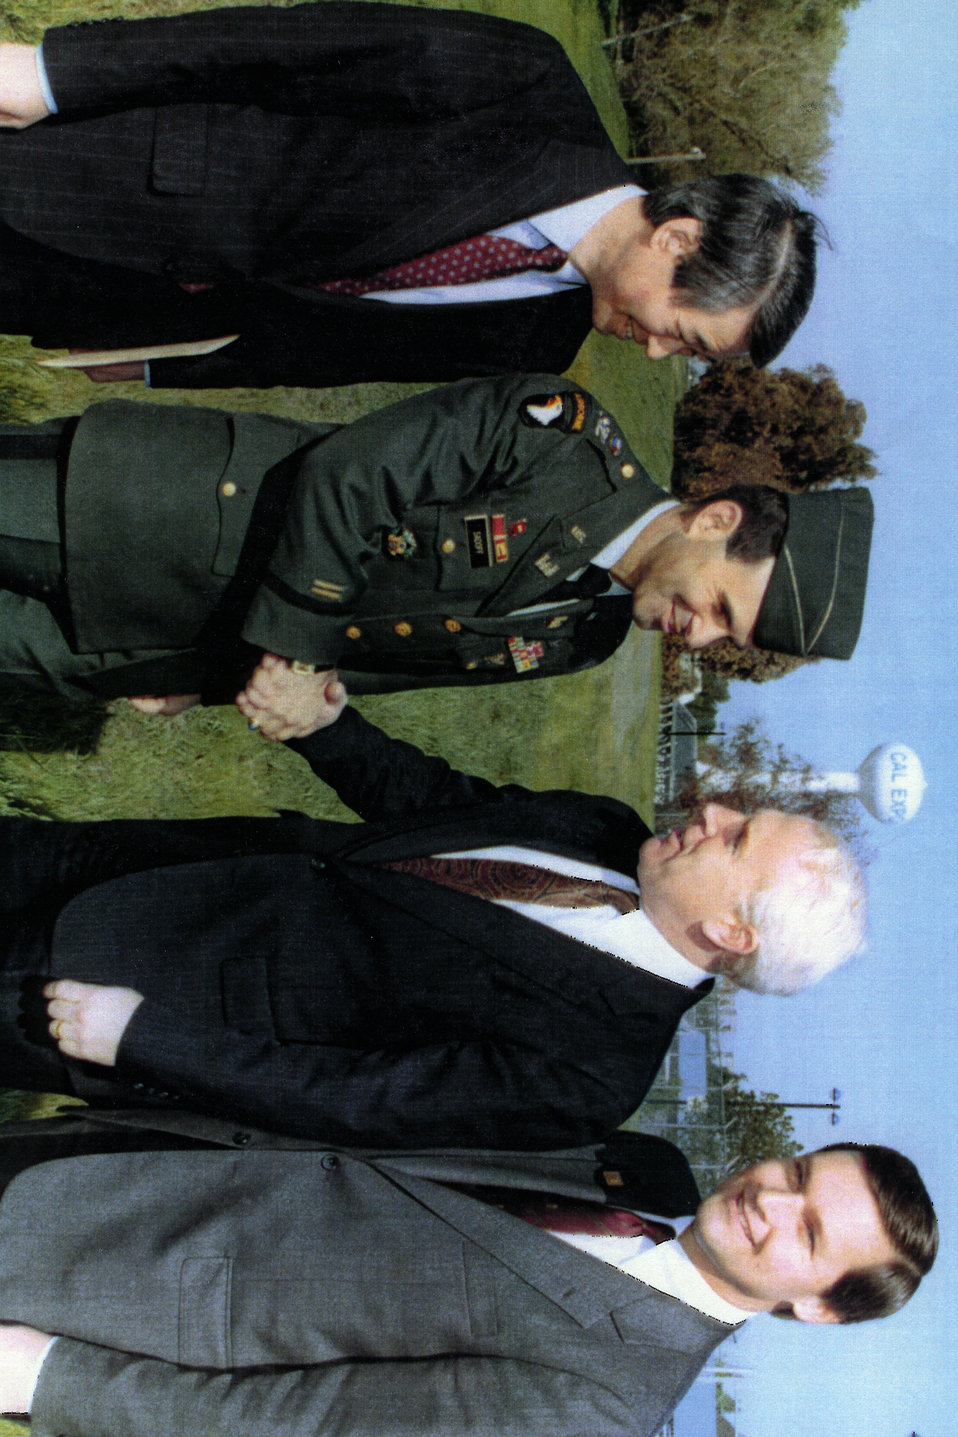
SACRAMENTO,Calif. (June 1,1990)--Congressman Vic Fazio is joined by Congressmen Matsui and Doolittle in congratulating the Sacramento District Corps of Engineers Commander COL Larry Sadoff. The ocassion celebrated the American River levee upgrades made in the Cal Expo area.